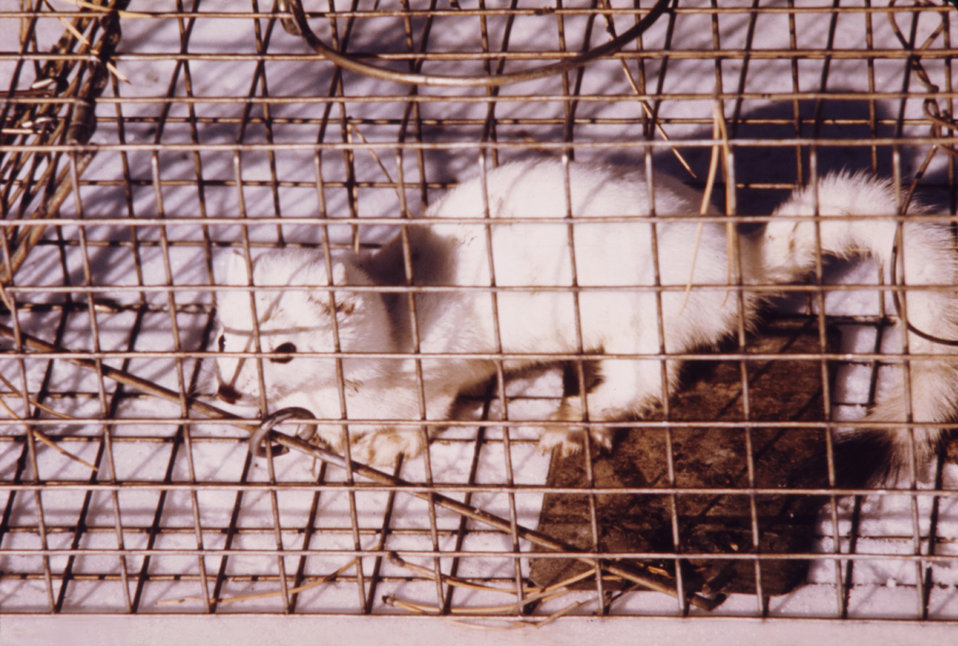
The long-tailed weasel, Mustela frenata, here seen in its winter pelage, is a carrier of plague vectors.